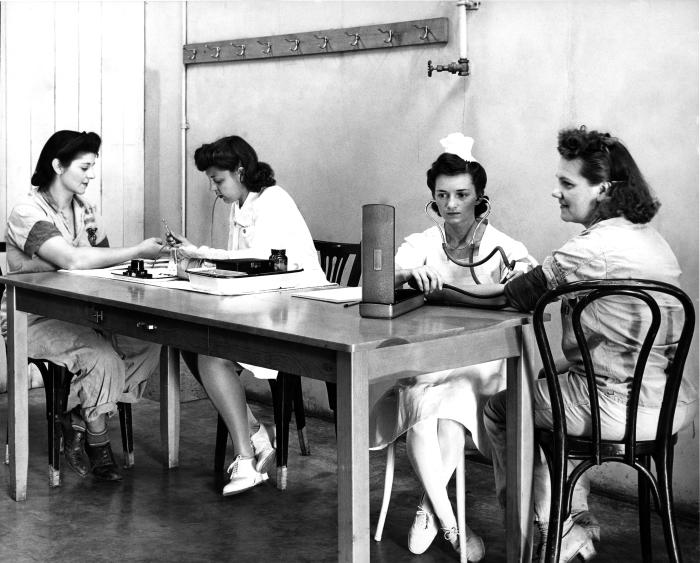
This historical 1943 image, which was provided by the Center for Disease Control's (CDC), National Institute for Occupational Safety and Health (NIOSH), depicted two inhouse nurses examining fellow coworkers at an Ohio TNT (trinitrotoluene) military ordnance manufacturing facility, for symptoms of TNT poisoning. The nurse the right was in the process of taking a blood pressure reading from one female employee using a sphygmomanometer, while the nurse at left was performing a finger stick (See PHIL 9790), thereby, extracting a blood sample that would later be analyzed for the presence of metabolites indicative of TNT poisoning.